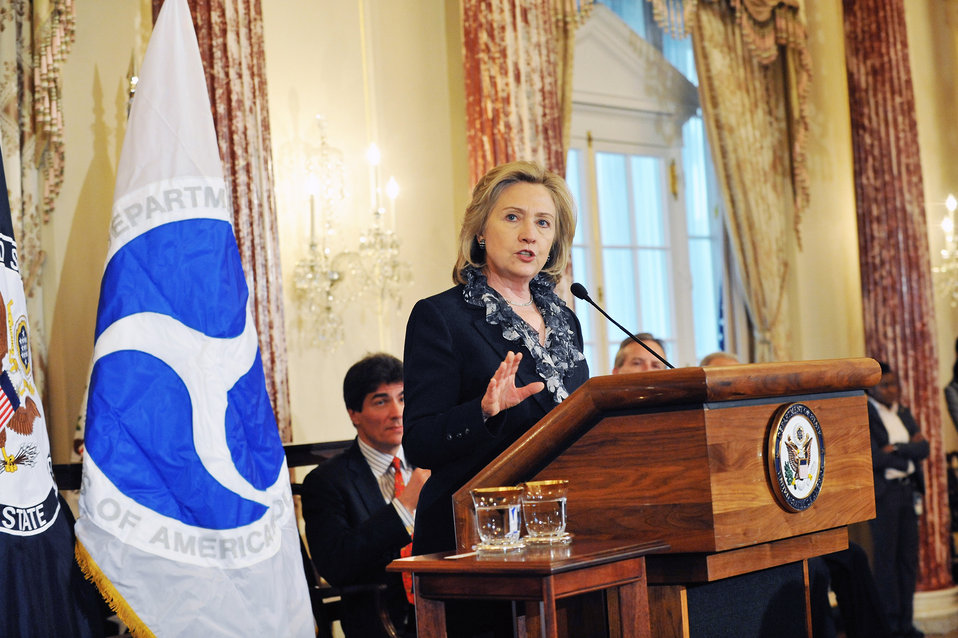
Secretary Clinton Delivers Remarks at Open Skies Ceremony

U.S. Secretary of State Hillary Rodham Clinton delivers remarks at a ceremony celebrating the negotiation of agreements between the United States and 100 Open Skies Partners, at the U.S. Department of State in Washington, D.C., on March 30, 2011.